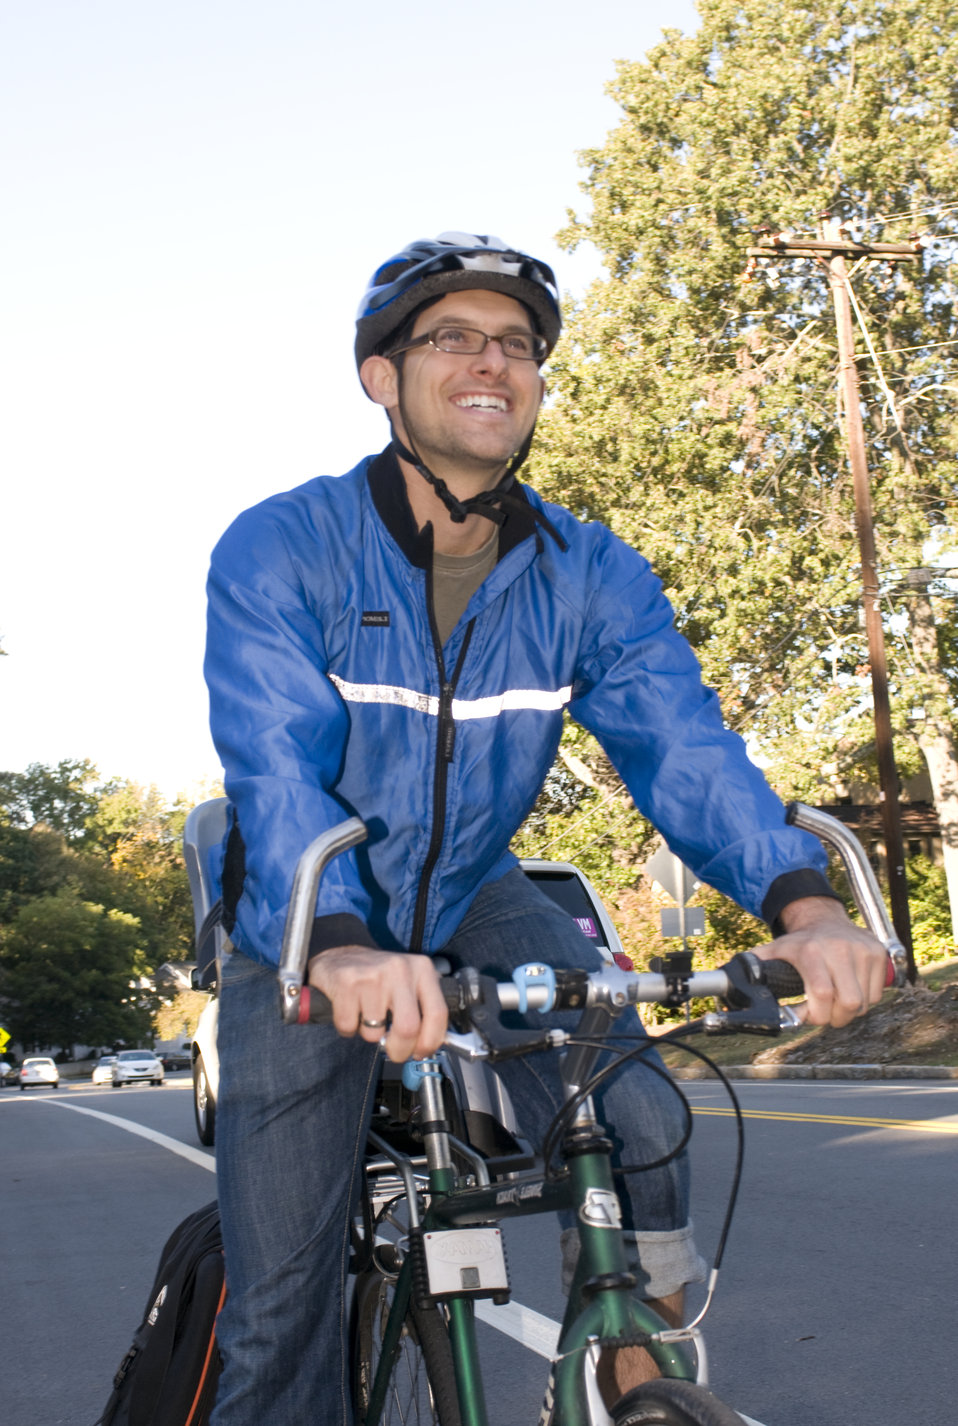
After having stopped for a short break, this male bicyclist was continuing his exercise. He was wearing a brightly-colored windbreaker, which would help drivers see them more easily, as well as a protective, aerodynamic helmet, and snug-fitting pants, all adding to an overall safer bike ride. Note that he was traveling in a designated bicycle lane, which allowed for a smoother, and much safer trip.